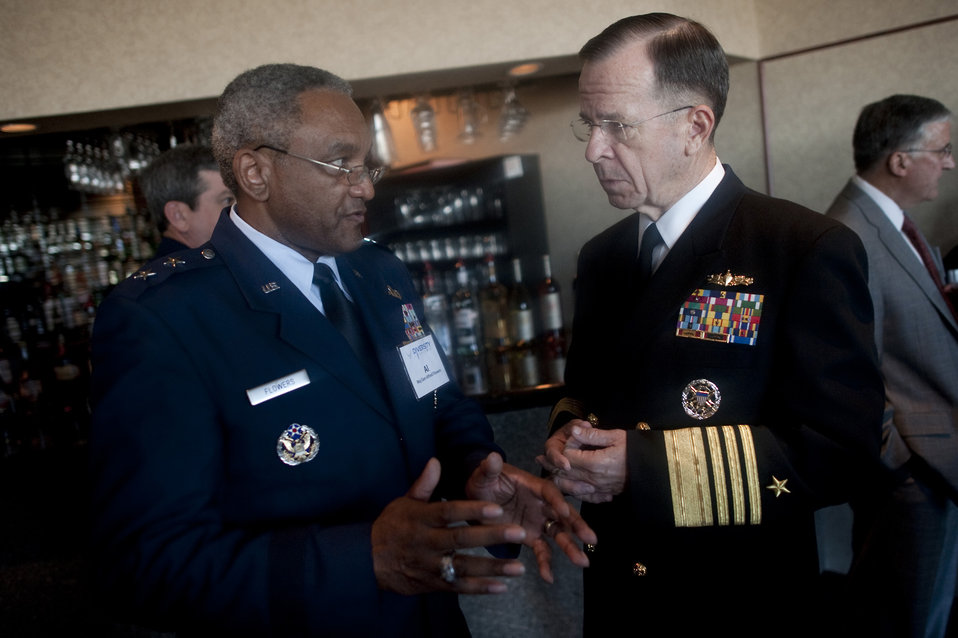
Maj. Gen. Alfred K. Flowers with chairman of the Joints Chief of Staff, Adm. Mike Mullen